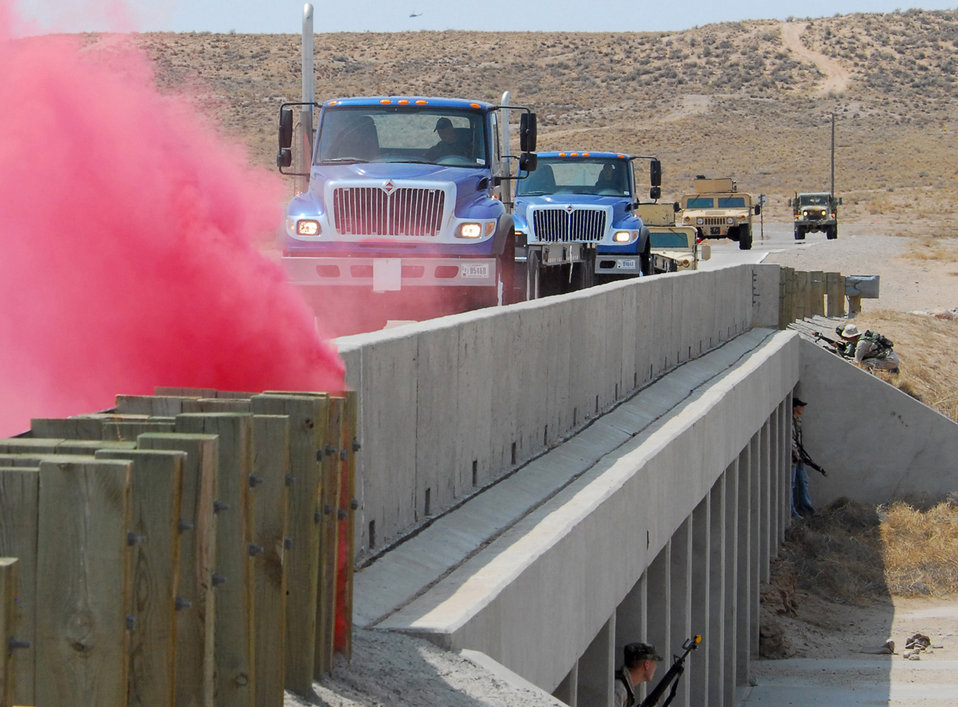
Ambush

A convoy rolls over a bridge where the Operation Force Team volunteers wait to